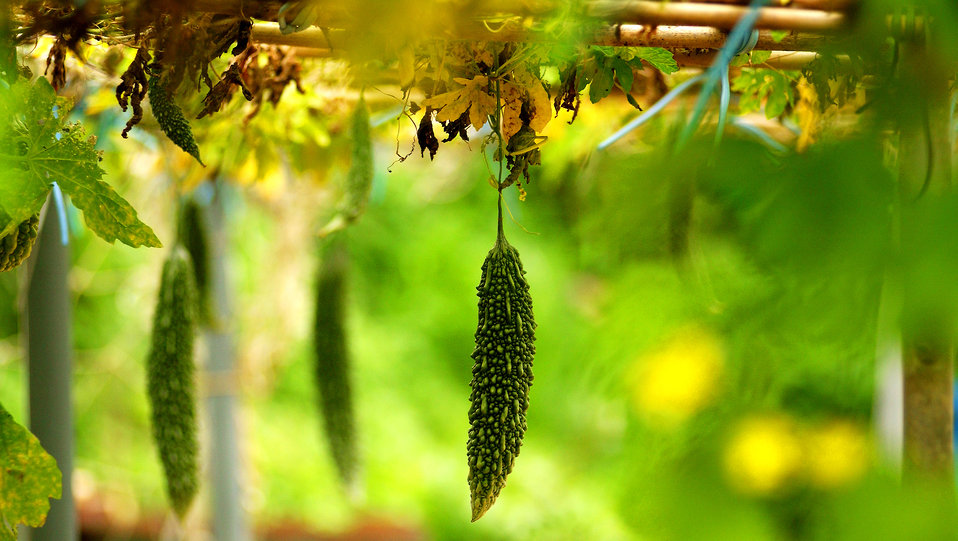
Tacit farmers return to their roots at air base

Goya is a popular vegetable in Okinawa. In addition to goya, produce grown on Kadena Air Base, Japan, includes limes, tangerines, mangos, papayas, toga and hechima vegetables, potatoes, green tea, pineapples and sugarcane. Kadena is the third largest producer of sugarcane in Okinawa.